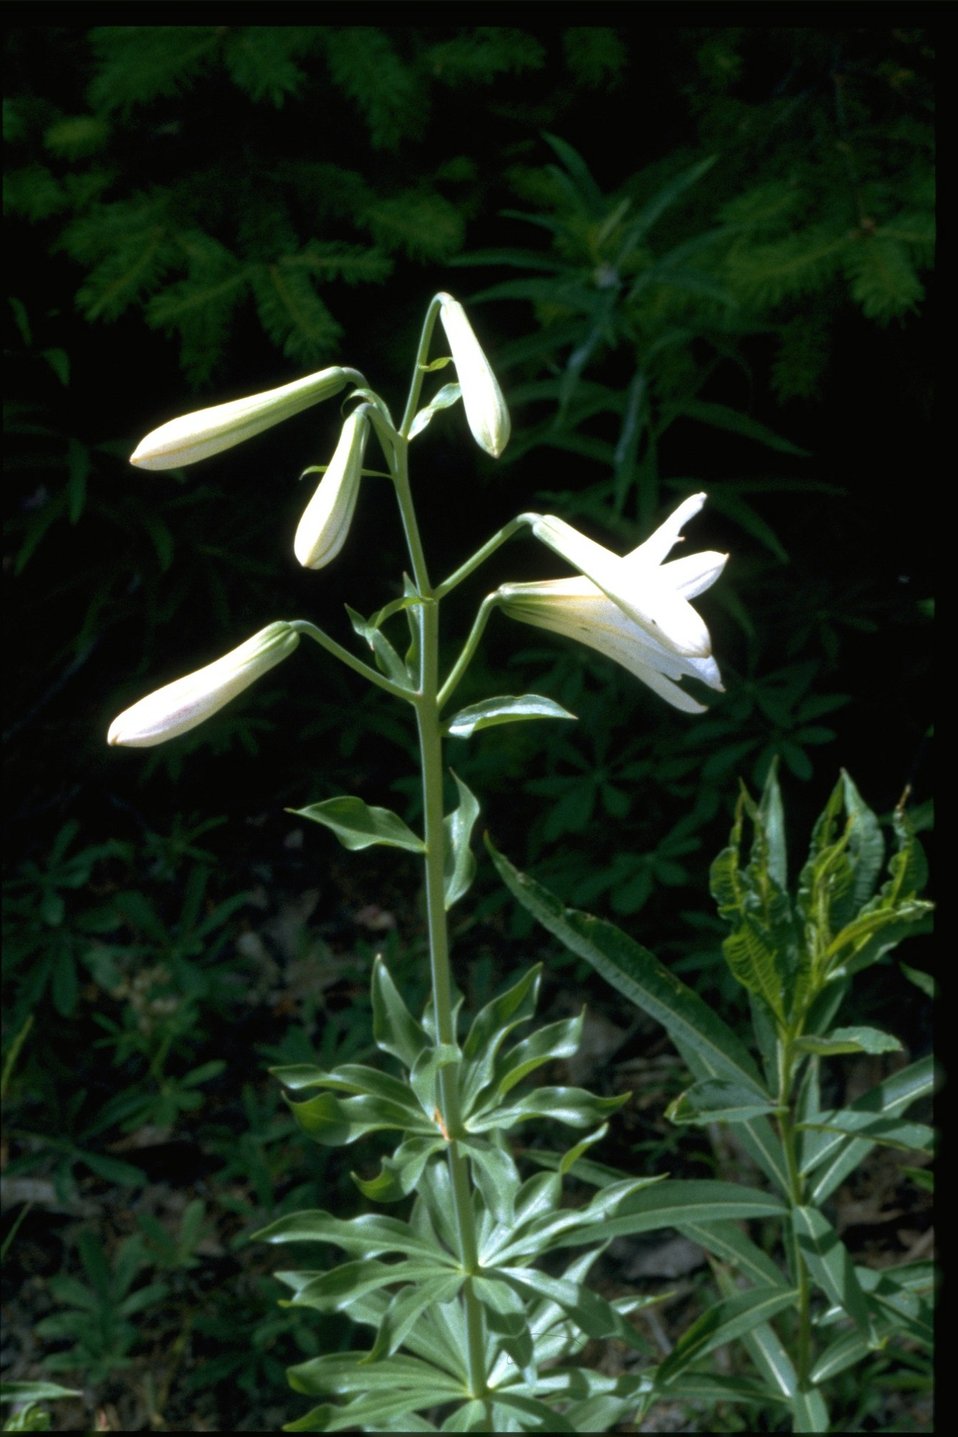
Medium shot of Lilium washingtonianum.